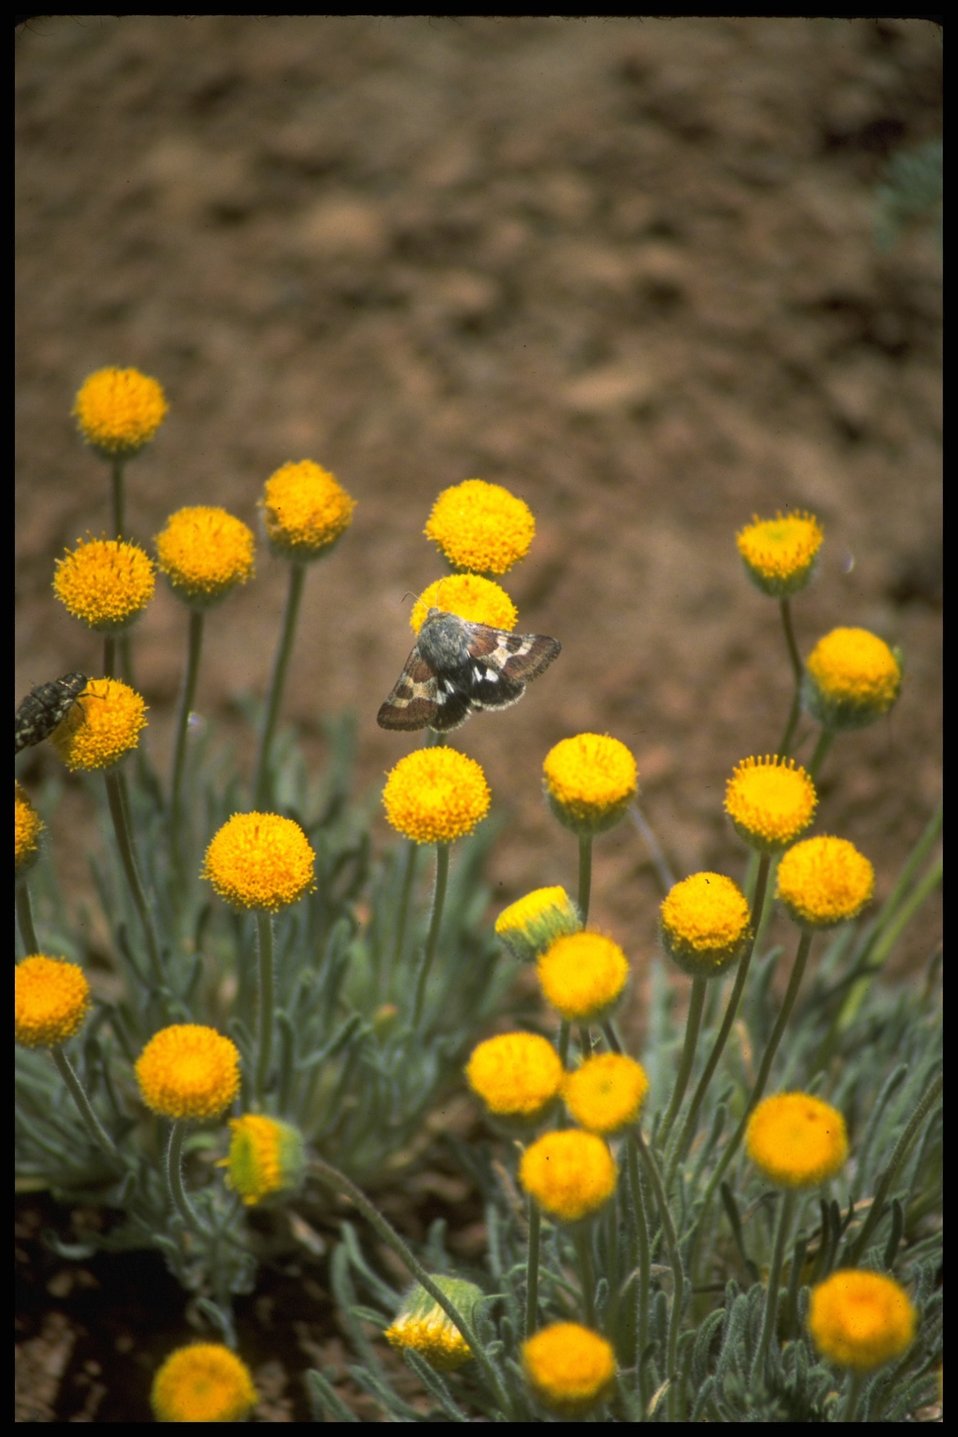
Medium shot of Scab Land Daisy habitat, Lakeview District.